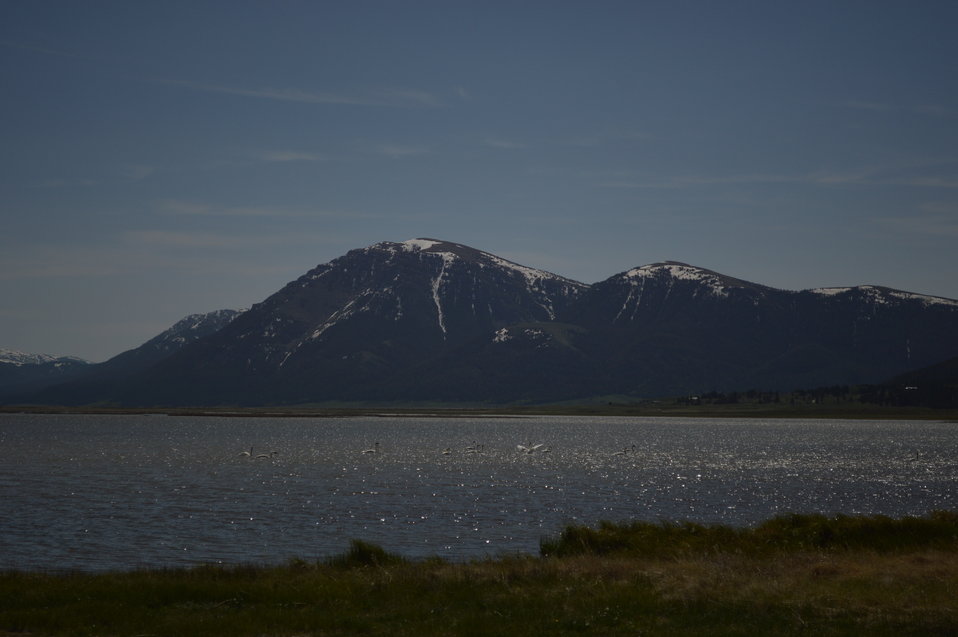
Regional Leadership Visit to Montana 2014